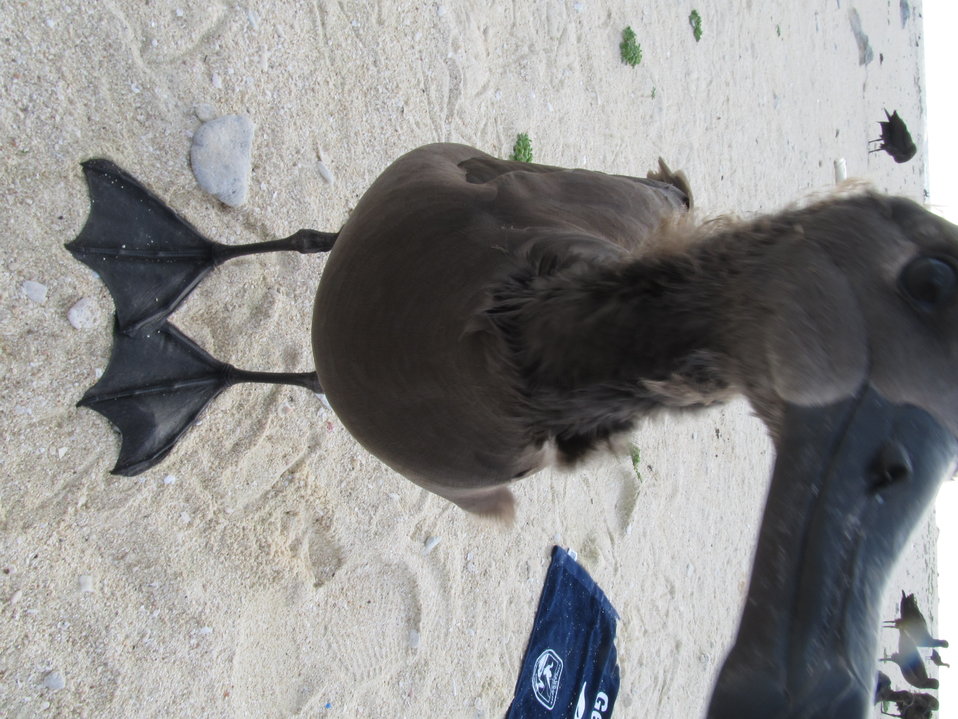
Get Your Goose On! - Albatross Style

Photo taken at Laysan Island in the Papahanaumokuakea Marine National Monument, Hawaiian Islands National Wildlife Refuge. Laysan is located approximately 800 miles northwest of Honolulu, Hawaii and is a remote field camp staffed year round for habitat restoration and population monitoring.